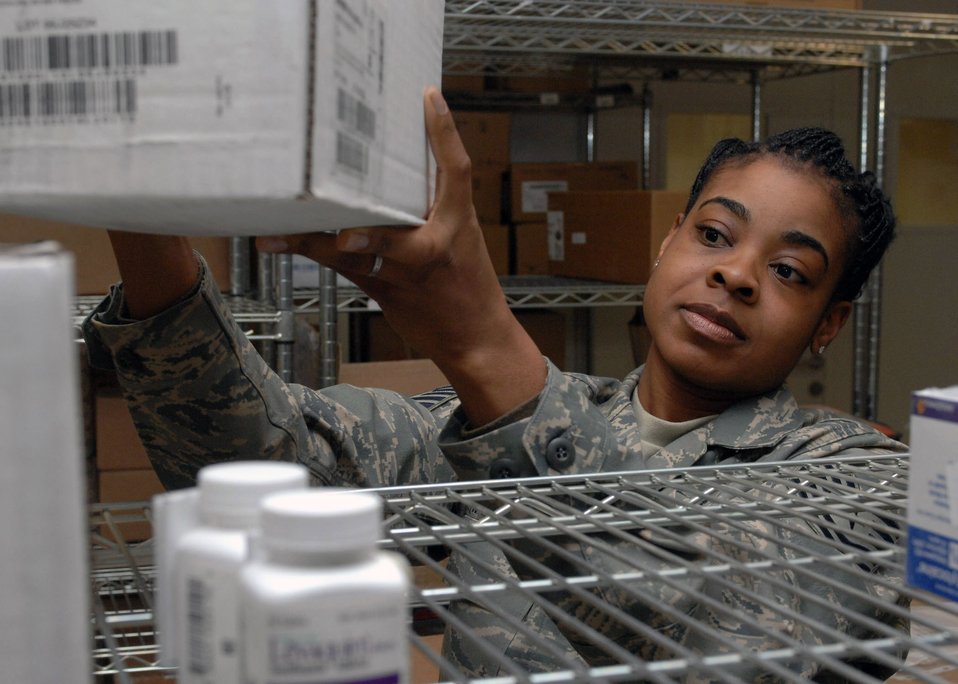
Bagram medical members important part of team

Tech. Sgt. Marygail Harmon stocks supplies Feb. 5 in the logistics store room at the Craig Joint Theater Hospital at Bagram Air Base, Afghanistan. Sergeant Harmon is the NCO in charge of medical material at the hospital. Sergeant Harmon's home unit is the 96th Medical Support Squadron at Eglin Air Force Base, Fla., where she is a medical supply technician.